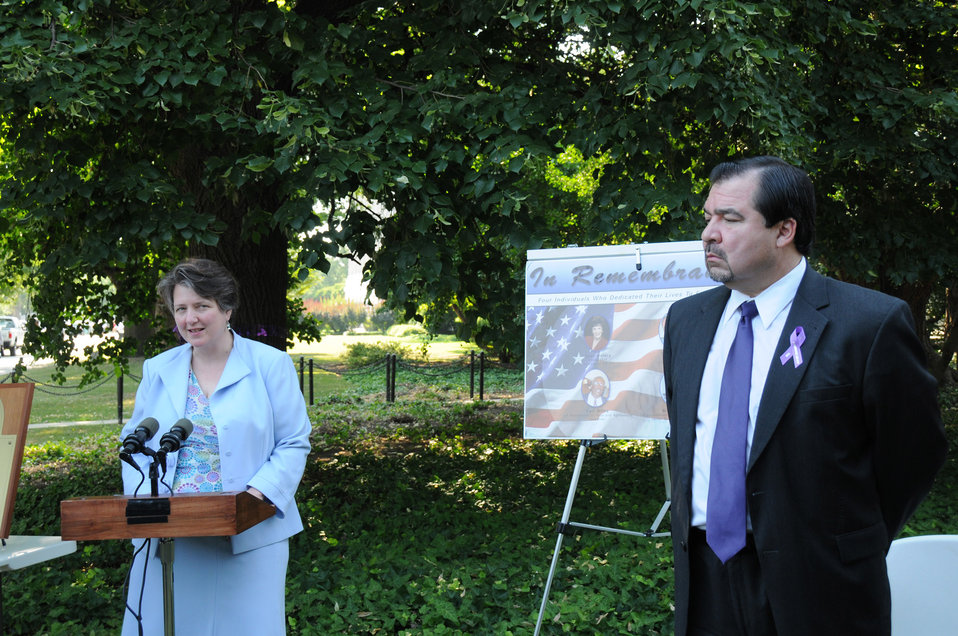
Deputy Secretary of Agriculture Kathleen Merrigan makes remarks at a ceremony to honor slain Food Safety Inspection Service Compliance Officers Jean Hillery and Thomas Quadros who were gunned down in the line of duty while inspecting a processing plant in CA. The event took place at the U.S. Department of Agriculture in Washington, DC, on Monday June 21, 2010. USDA Photo 10di1413-0043.